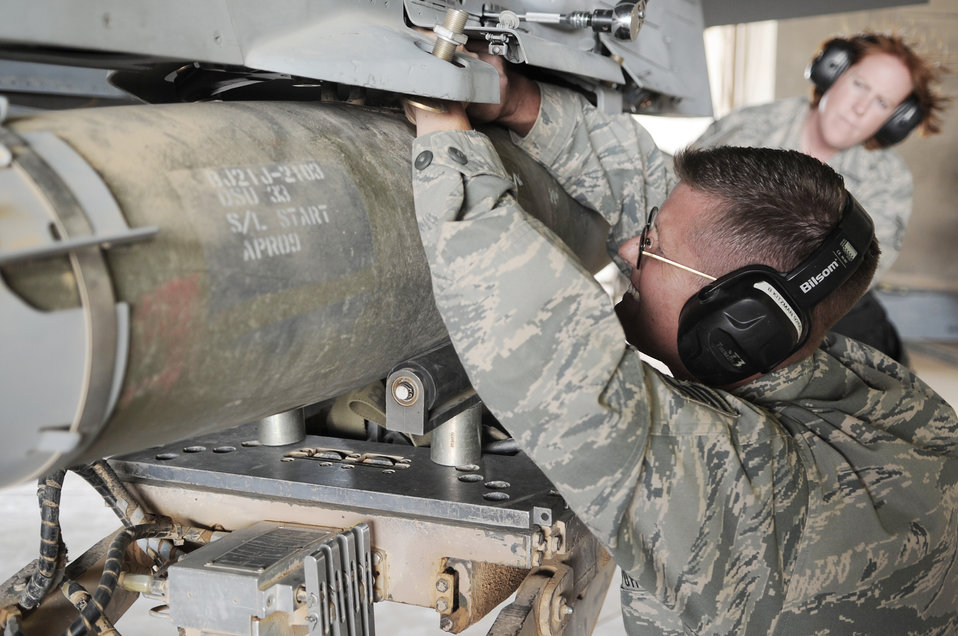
Weapons loaders arm jets for the fight

Tech. Sgt. Brett Kitzman and Staff Sgt. Michelle Torrey load munitions onto an F-16 Fighting Falcon June 29 at Joint Base Balad, Iraq. Sergeants Kitzman and Torrey are both 332nd Expeditionary Aircraft Maintenance Squadron weapons loaders and deployed from Buckley Air Force Base, Colo. Sergeant Kitzman is a native of Aurora, Colo., and Sergeant Torrey is a native of Greeley, Colo.